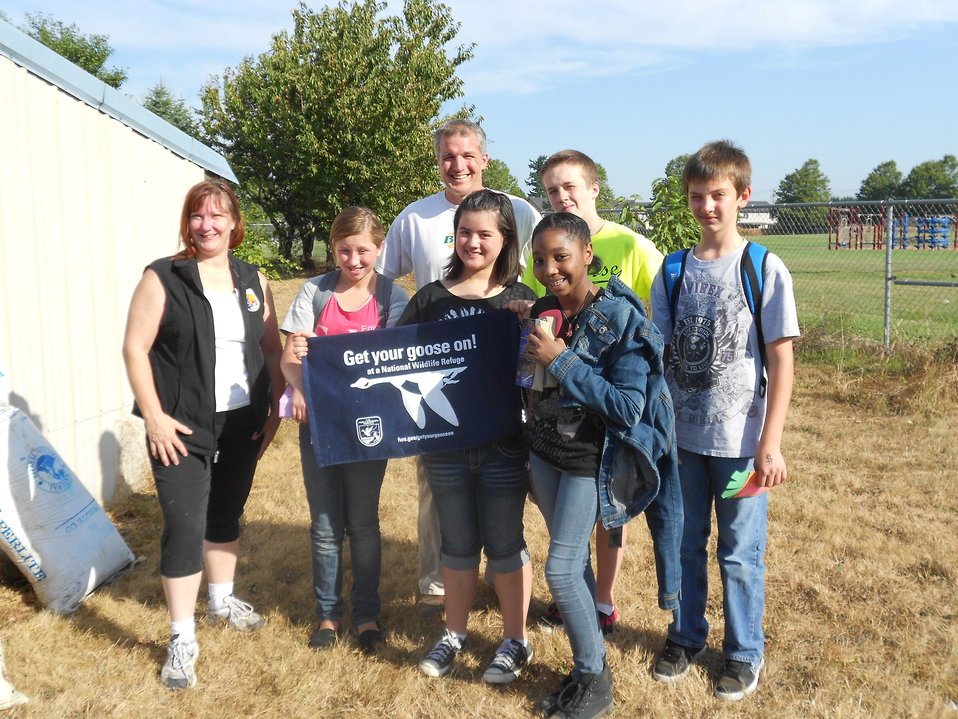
GYGO! Veggie Maniacs Style

The Veggie Maniacs 2012 - Get their Goose On working on restoring and enhancing their schoolyard.